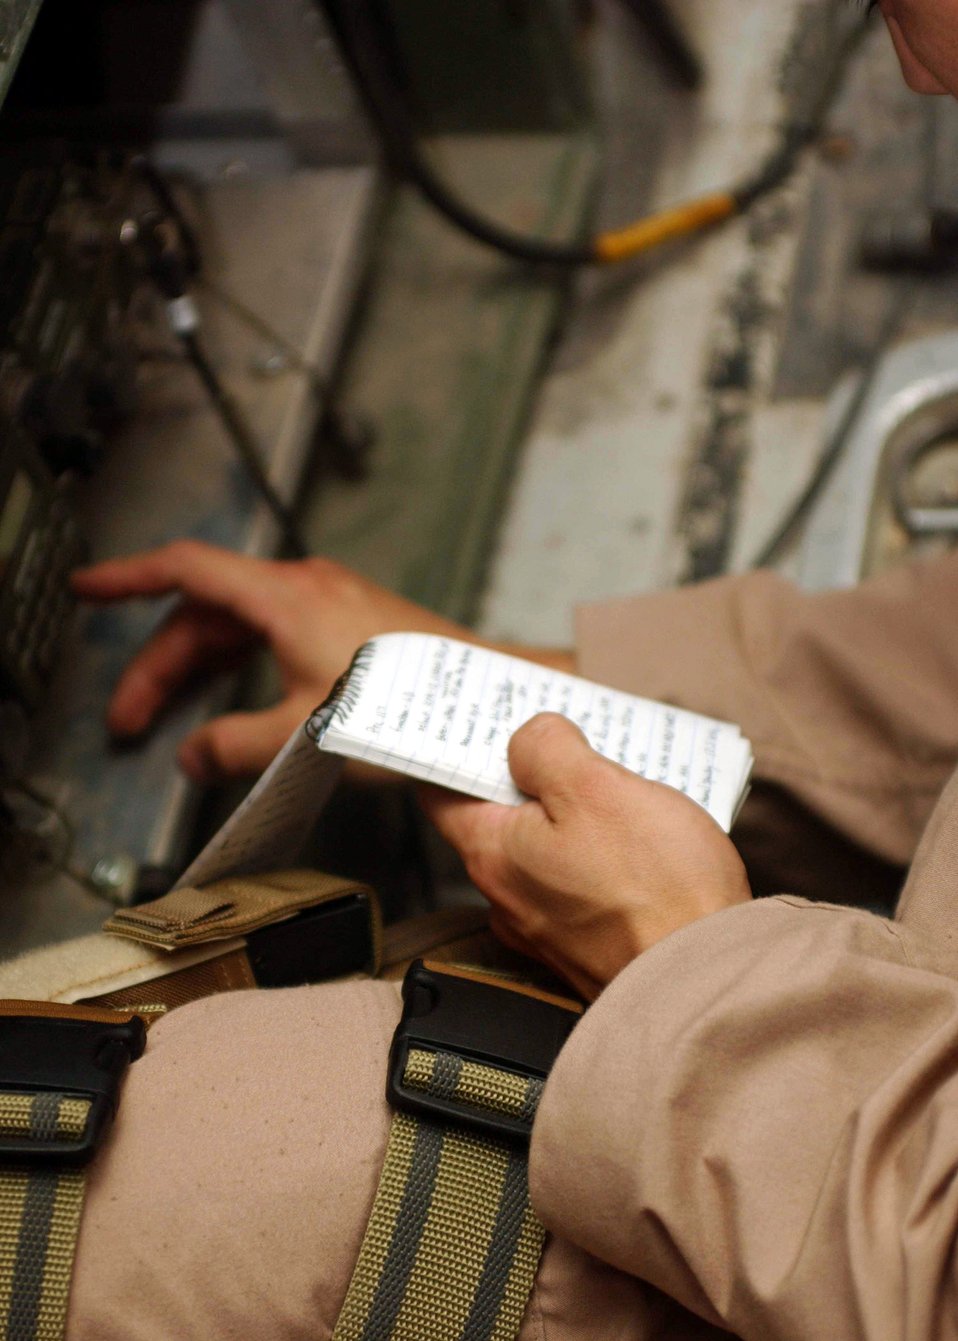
Airborne staff connects ground forces

Senior Airman Raymond Felix checks radio frequencies before taking off on a Joint Airborne Battle Staff mission over Iraq. While they fly, joint service battle staff members monitor several radio channels at a time, listening in on coalition convoys on the ground and relaying radio calls when necessary, ranging from routine radio checks to medical evacuation requests. Airman Felix is a communications technician with the battle staff.